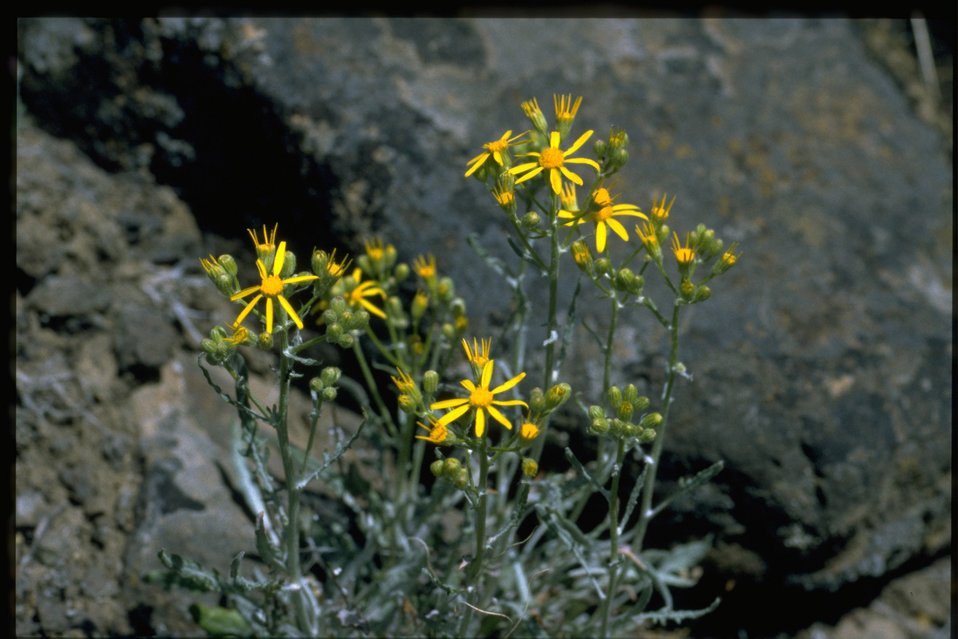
Medium shot of western groundsel (Senecio integerrimus)